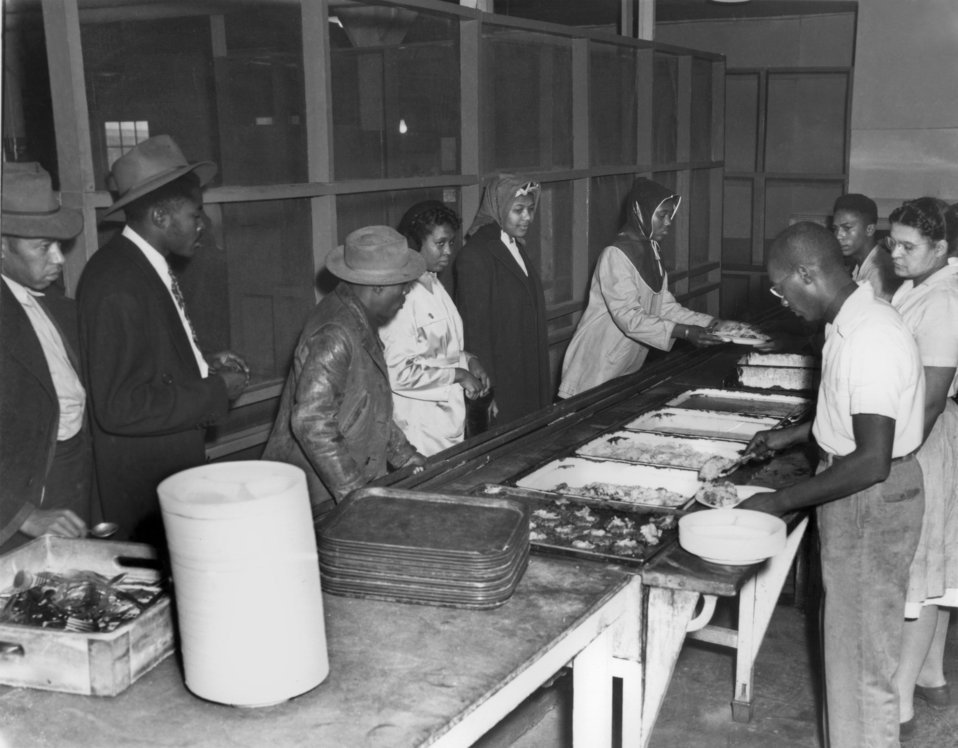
Cafeteria Oak Ridge

1310-2 DOE photo by Ed Westcott 1945 Oak Ridge Tennessee